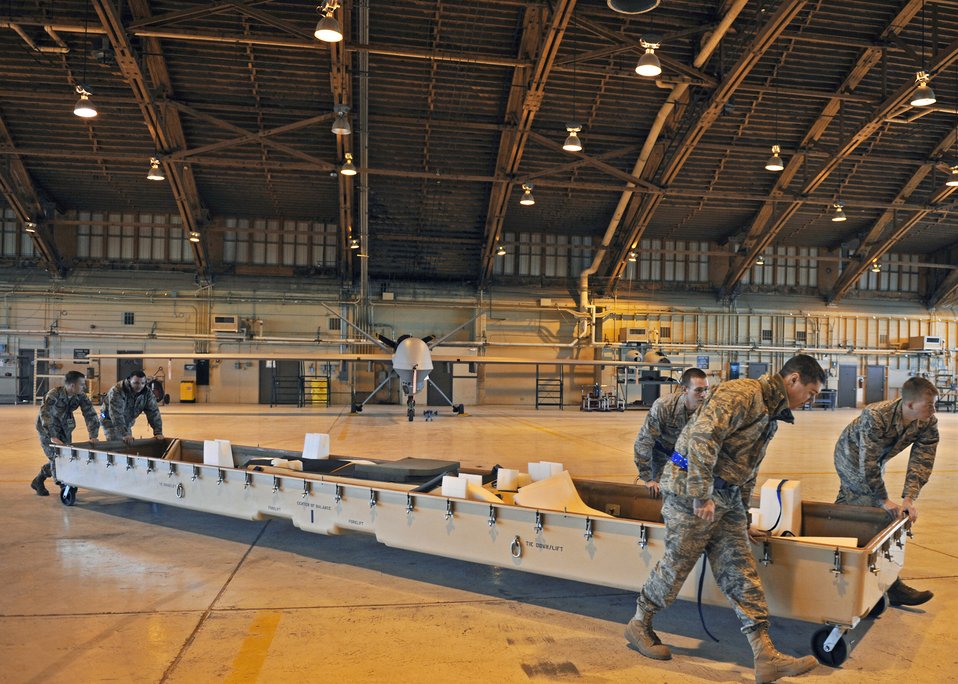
849th provides eyes in the sky of Haiti

Airmen from the 849th Aircraft Maintenance Squadron push a casket across the hangar Jan. 17, 2010 at Holloman Air Force Base, N.M. The Airmen disassembled and packaged an MQ-1 Predator for departure in support of Operation Unified Response.